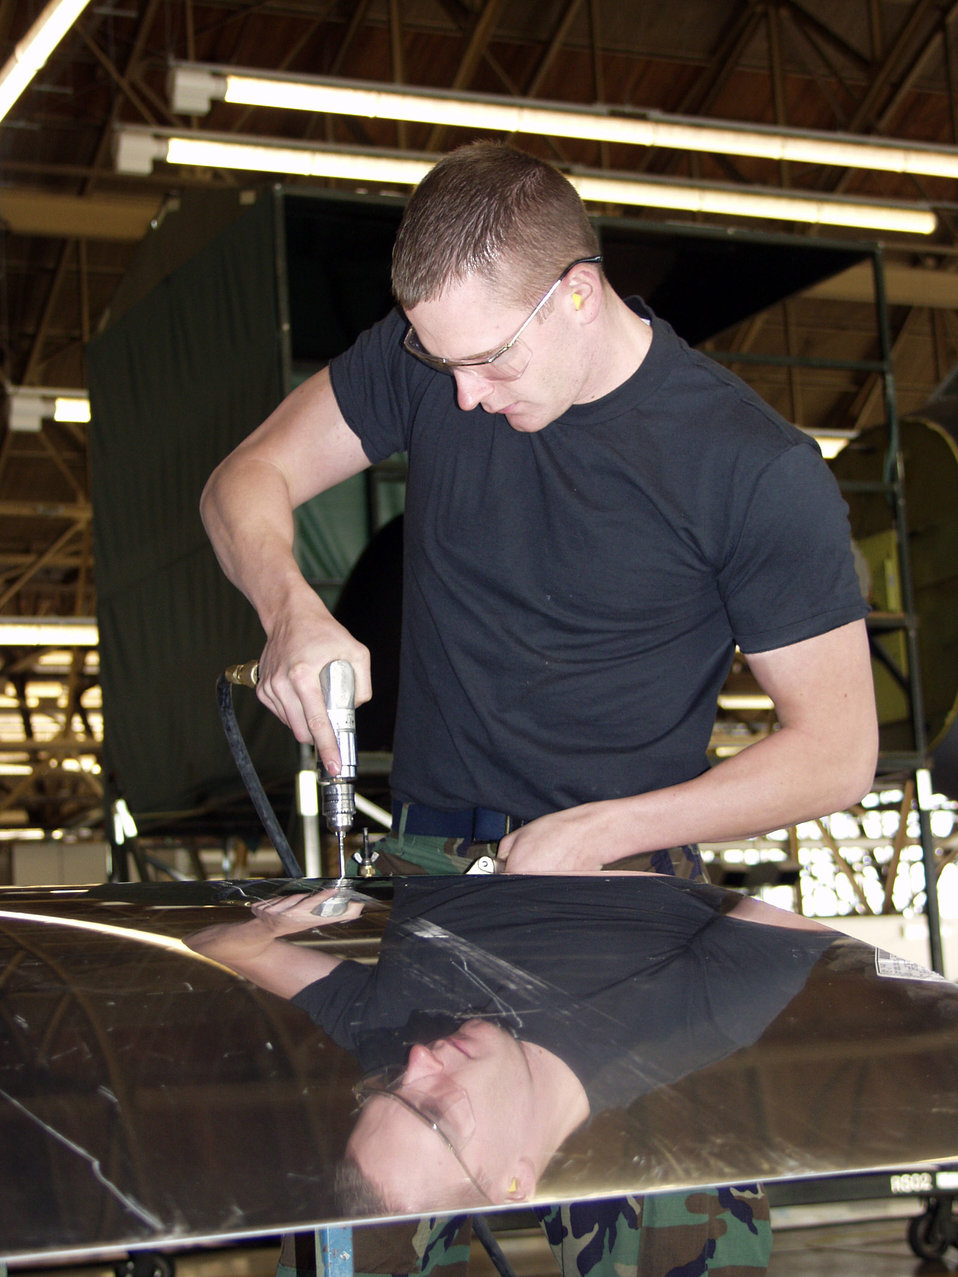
Keeping the mission going at home, away

FAIRCHILD AIR FORCE BASE, Wash. -- Senior Airman Shawn Krah drills a template to replace a panel in a hangar here. Airman Krah, along with more than 300 Airmen from Grand Forks Air Force Base, N.D., have deployed here while their runway is under construction. Airman Krah is assigned to the 319th Maintenance Squadron.